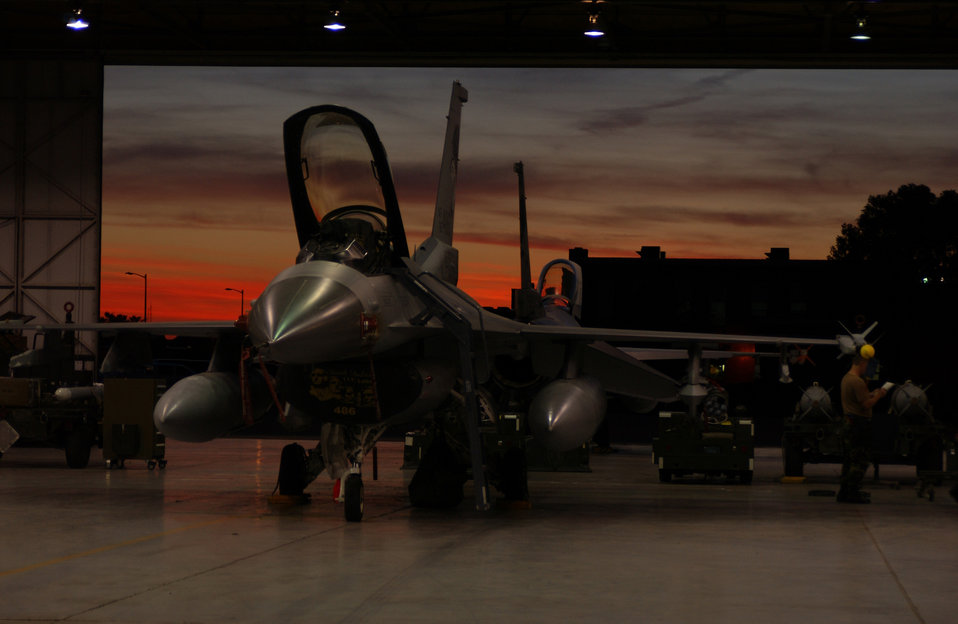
Working the night shift

SIOUX FALLS, S.D. -- Maintenance crews work on an F-16C Fighting Falcon here Sept. 11. The South Dakota Air National Guard's 114th Fighter Wing is conducting night flying missions during their September unit training assembly.